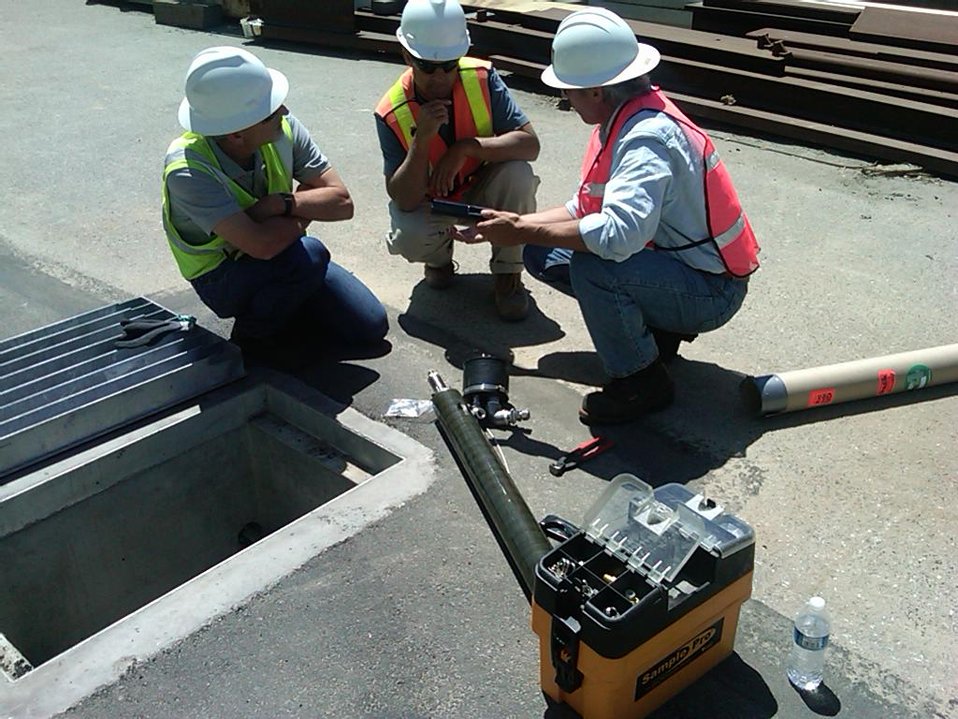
Recovery Act Supports Soil and Debris Cleanup, Groundwater Treatment at SLAC

Recovery Act workers are on track to remove more than 30,000 cubic yards of contaminated soil and debris at the SLAC National Accelerator Laboratory by September 2011.
The Recovery Act invested $14.3 million in legacy cleanup activities at SLAC. In addition to removing contaminated soil and debris that is shipped to local disposal facilities, Recovery Act workers installed three new groundwater treatment systems.